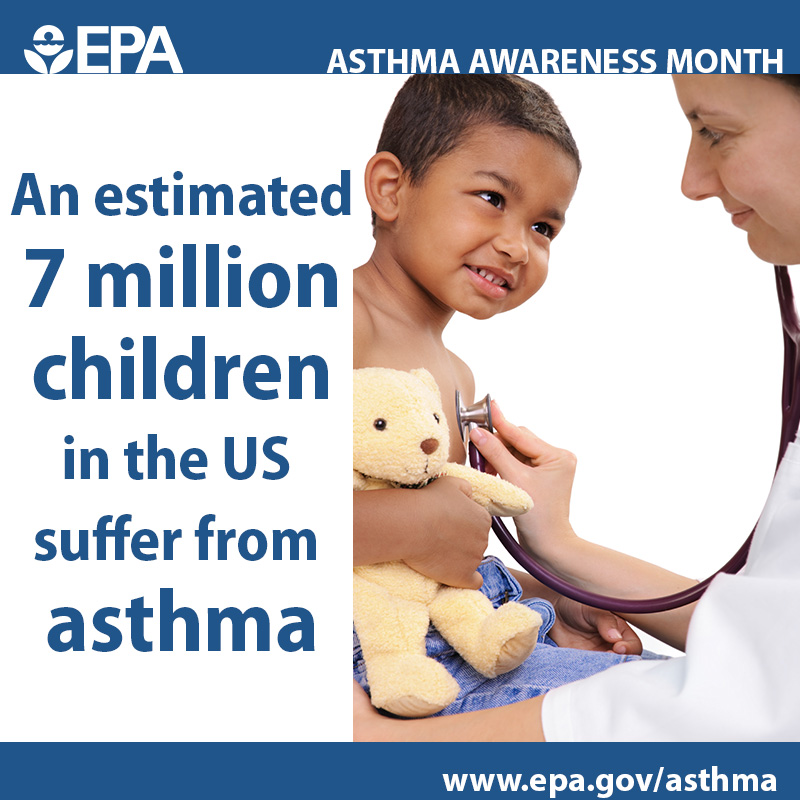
7 million children in the U.S. suffer from asthma. You can help your child manage environmental triggers and control their asthma.